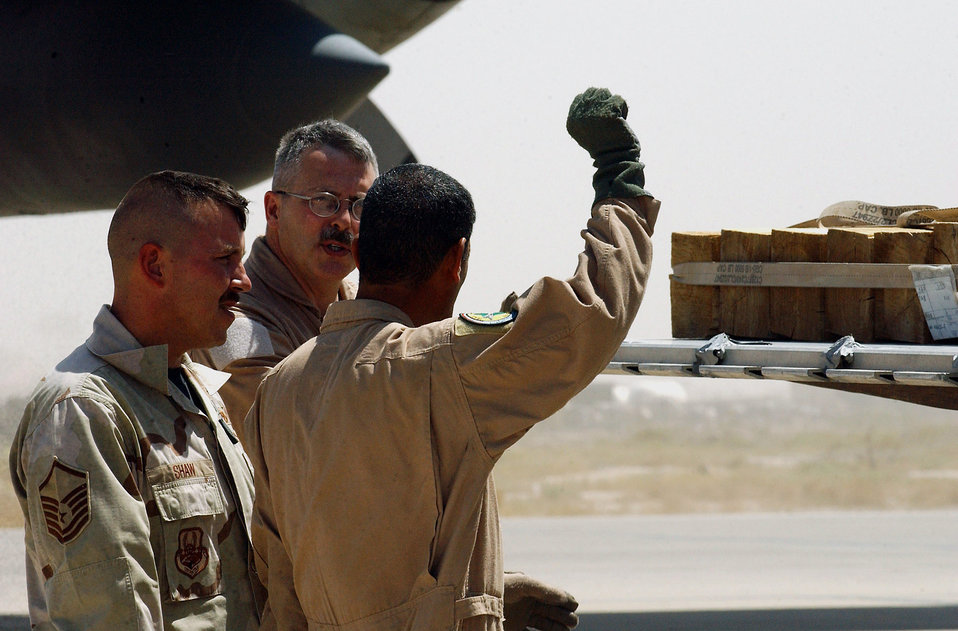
Airmen teach C-130 ops to Iraqi students, learn about sacrifice

ALI BASE, Iraq -- Master Sgt. Patrick Shaw (left) and Senior Master Sgt. James Baarda instruct one of their Iraqi air force students (right) on the finer points of loading a C-130 Hercules. The Airmen are part of a crew of more than 30 instructors teaching more than 100 Iraqi airmen how to fly and maintain C-130s here. Sergeant Shaw is an aerial port instructor assigned to the 777th Expeditionary Aircraft Maintenance Squadron and is deployed from McChord Air Force Base, Wash. Sergeant Baarda is a loadmaster instructor assigned to the 777th Expeditionary Airlift Squadron and is deployed from Yokota Air Base, Japan.